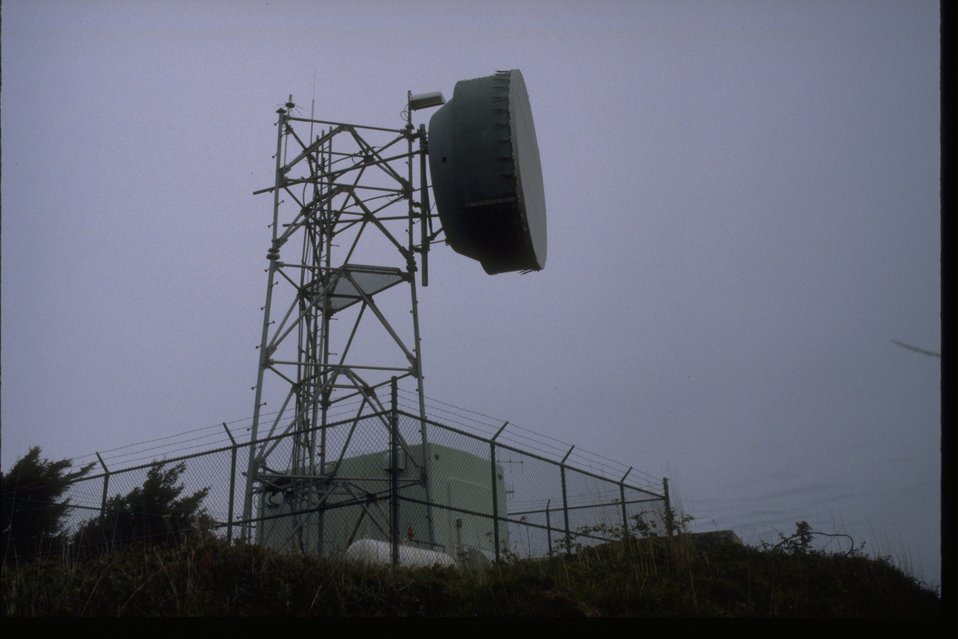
Communications site on Communication Hill.